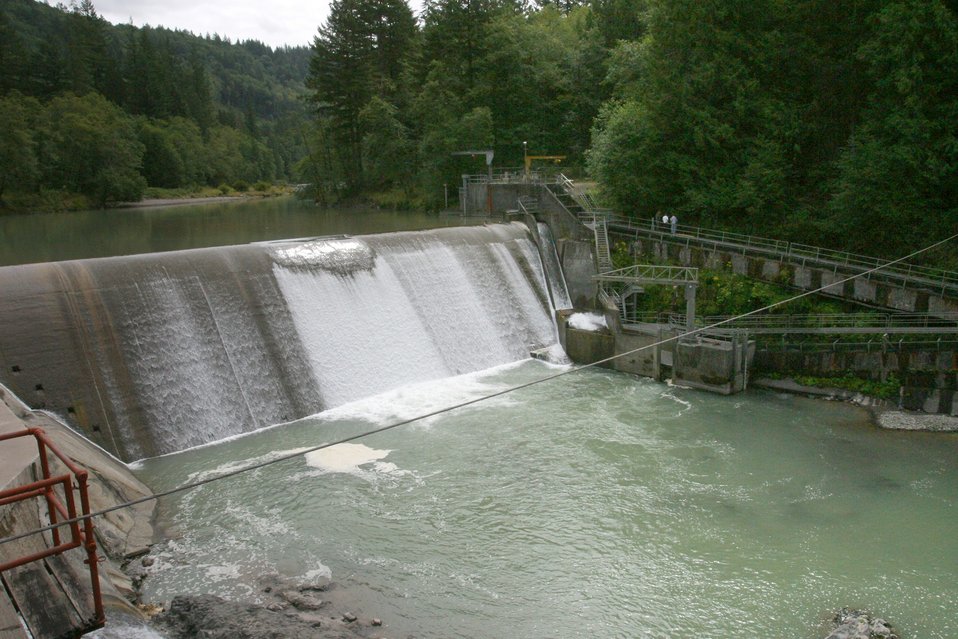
Marmot Dam on the Sandy River is scheduled to be removed in 2006.